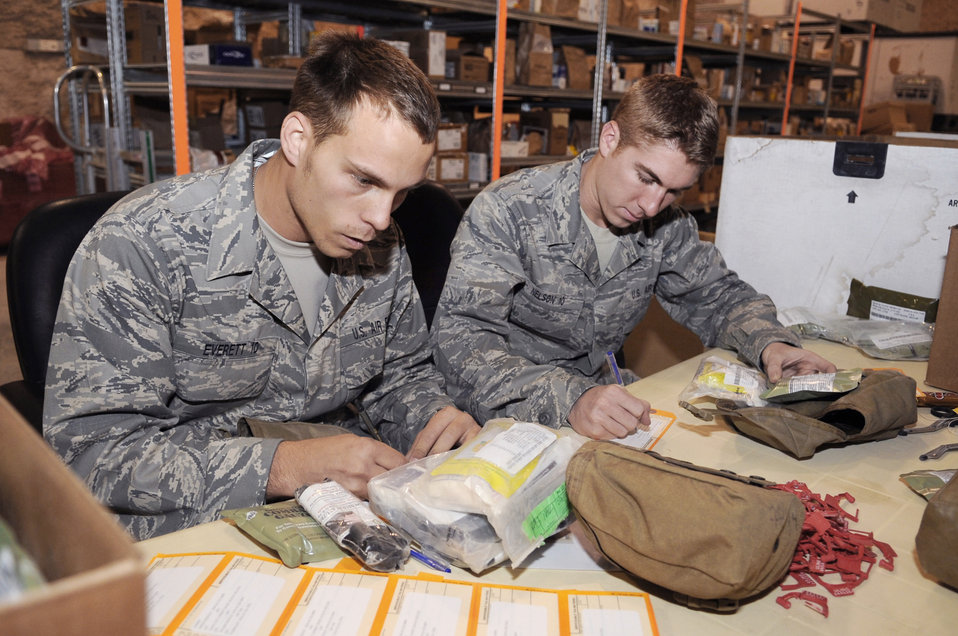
Cadets experience deployment tempo

U.S. Air Force Academy Cadets Dan Everett and Erik Nelson build individual first aid kits for deploying members heading downrange while visiting the 379th Expeditionary Medical Group facilities June 25 at an air base in Southwest Asia. The cadets are part a program called Operation Air Force, which gives them exposure to the operational side of the Air Force before being commissioned. Cadet Everett hails from Isanti, Minn., and Cadet Nelson is from Montville, Conn. Both are visiting from the Academy. to gain knowledge about operations Iraqi Freedom and Enduring Freedom.